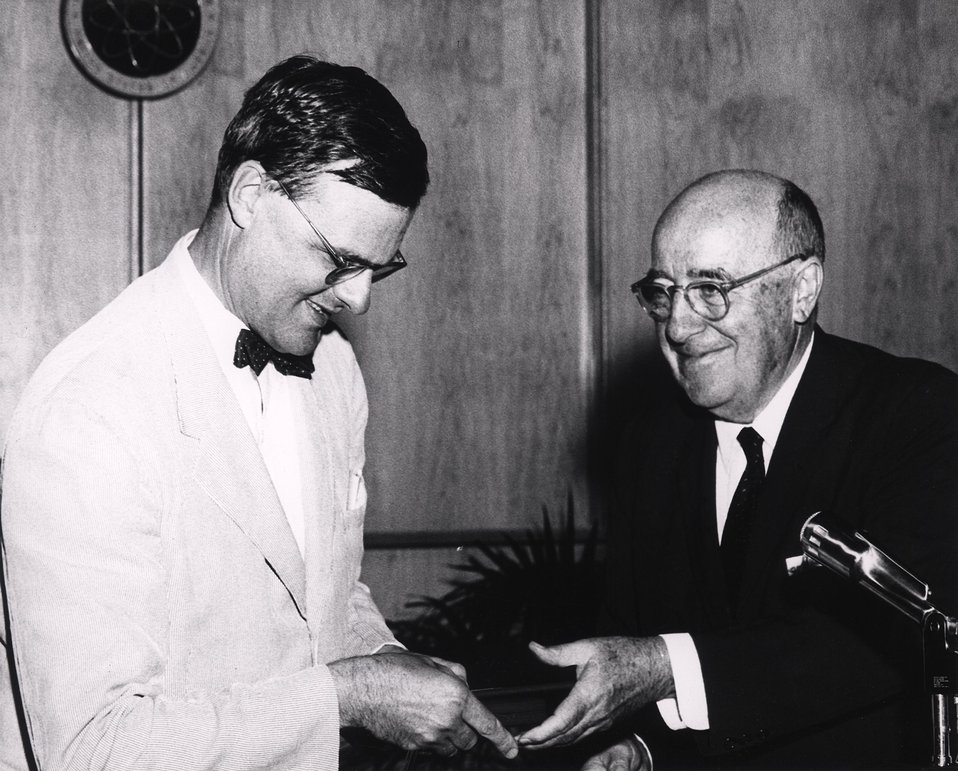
First Lawrence Award Ceremony, in Washington, on June 27, 1960.